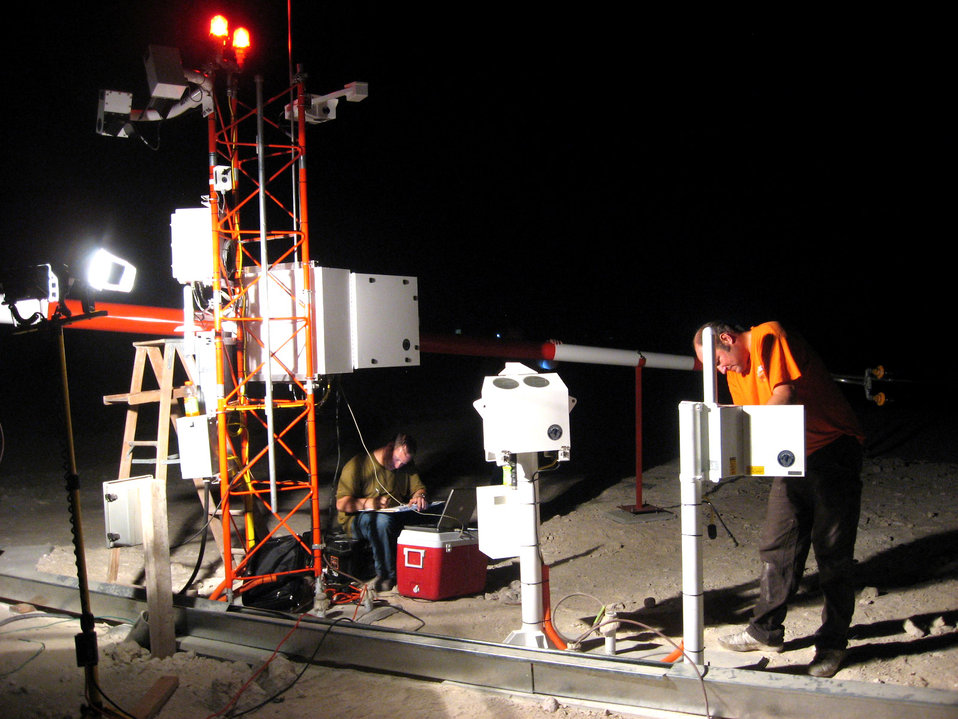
ESC completes worldwide weather system installations

Steve Clark (left) and Dan Smith of Coastal Environmental, Inc. perform site acceptance and testing measures on portions of the FMQ-19 weather sensing system in Southwest Asia. This system was the last of 110 to be installed under a five-year, $70 million effort. System installation at the Southwest Asia location was done mainly at night, as day-time temperatures often exceeded 100 degrees.